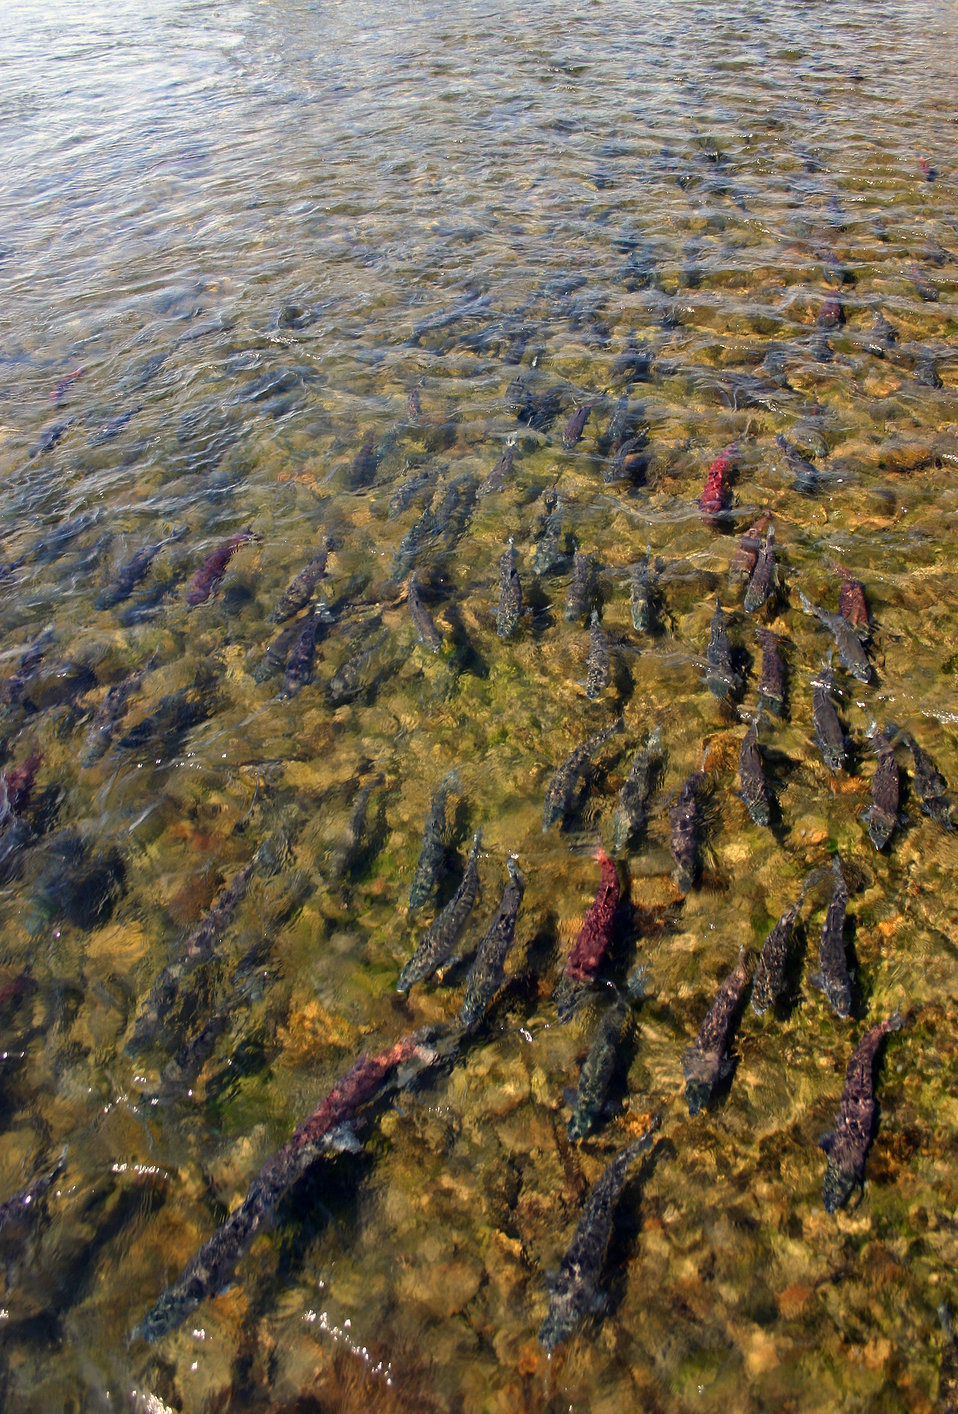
Salmon Migration